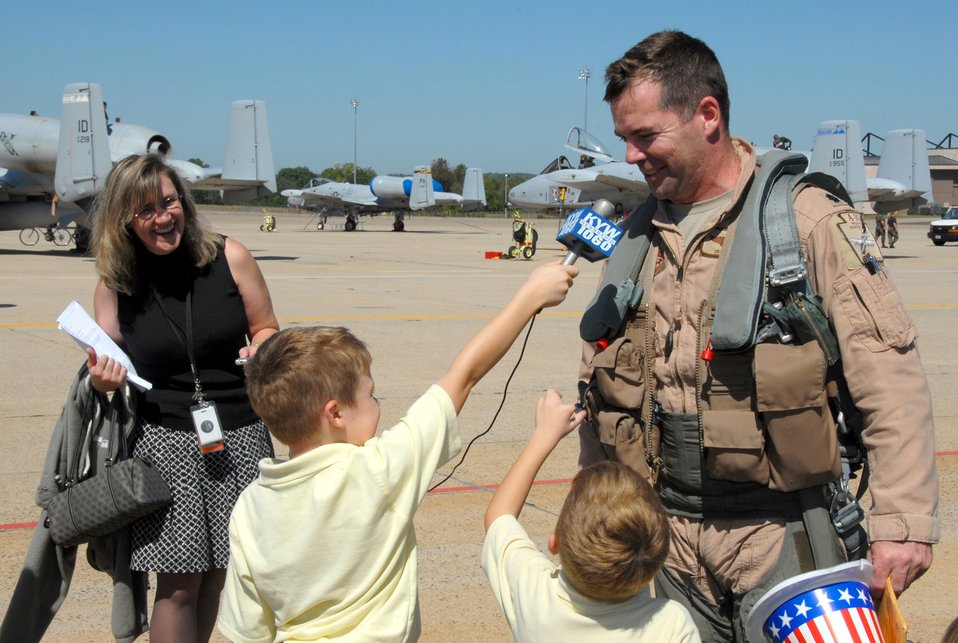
Welcome home

Lt. Col. William Griffin, an A-10 Thunderbolt II pilot with the Pennsylvania Air National Guard's 111th Fighter Wing at Willow Grove Air Reserve Station, Pa., participates in a special interview Sept. 19 after returning from a deployment to Iraq.